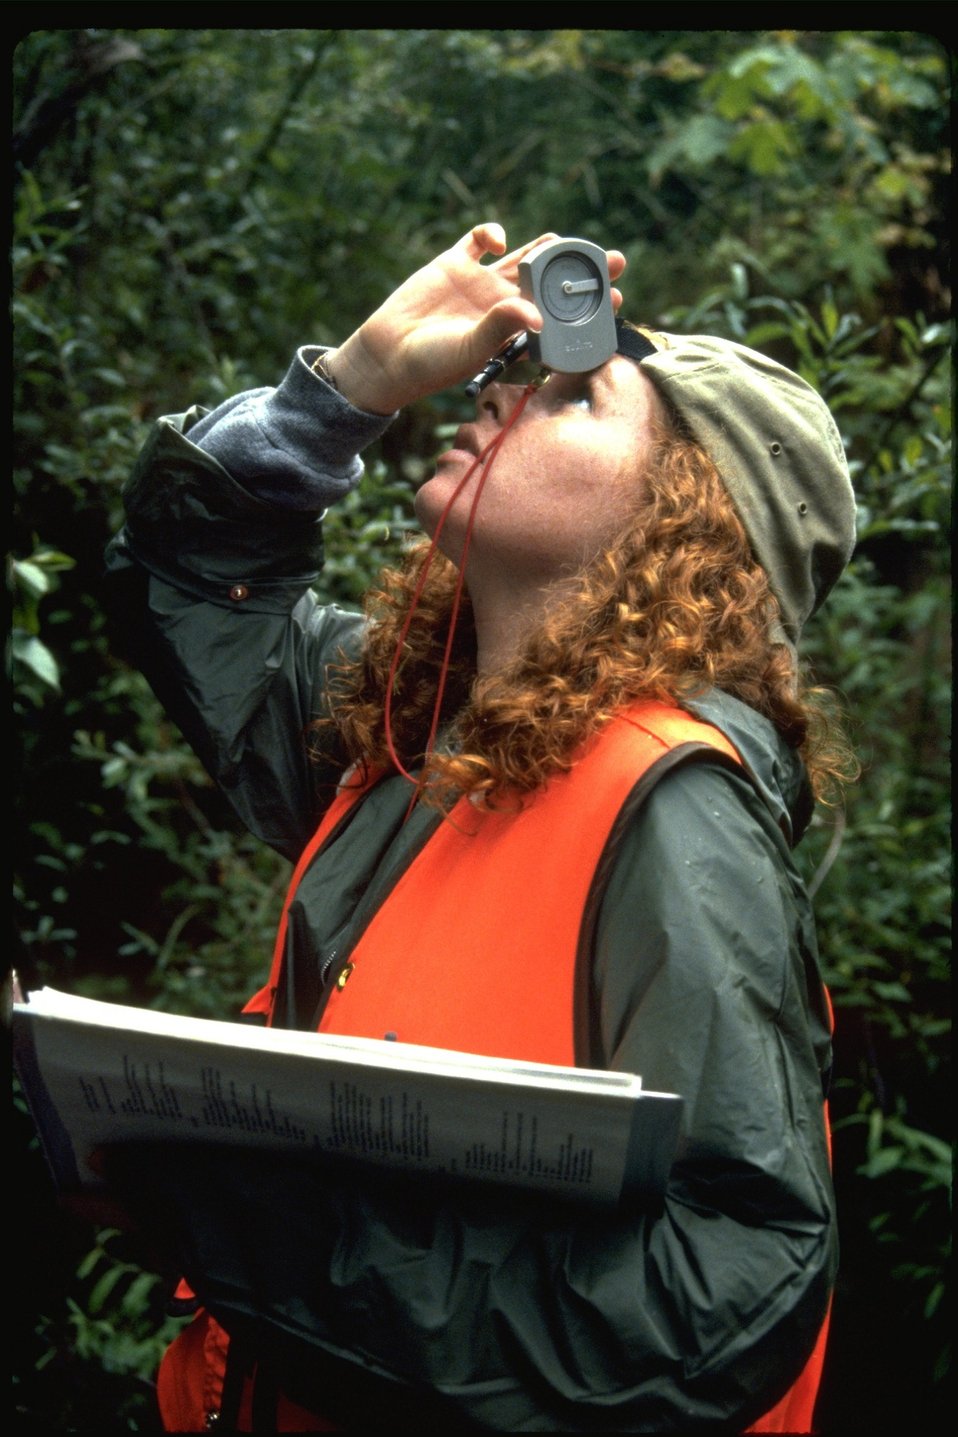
Sarah surveying Smith Creek during habitat study.